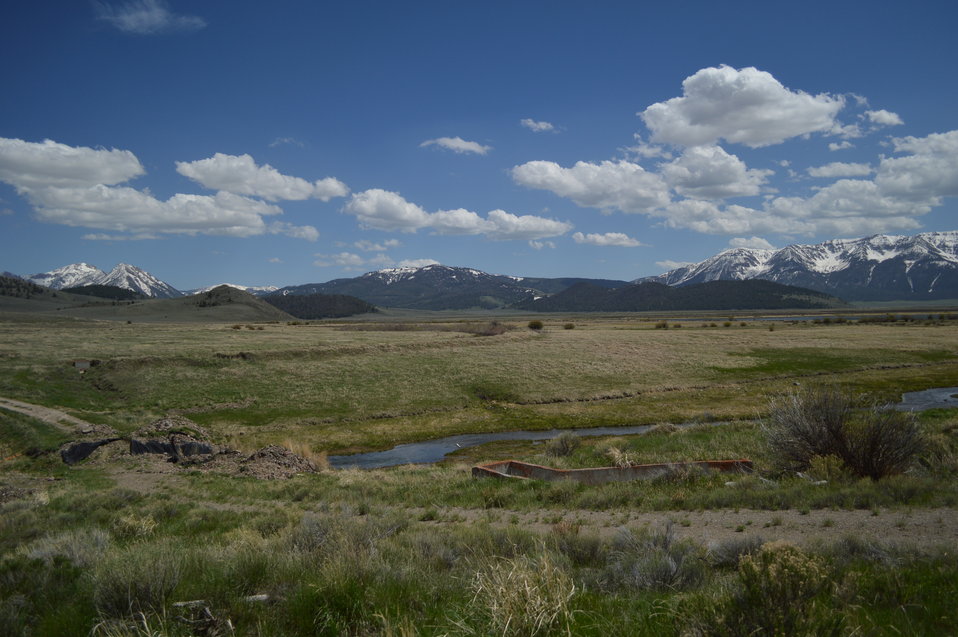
Regional Leadership Visit to Montana 2014